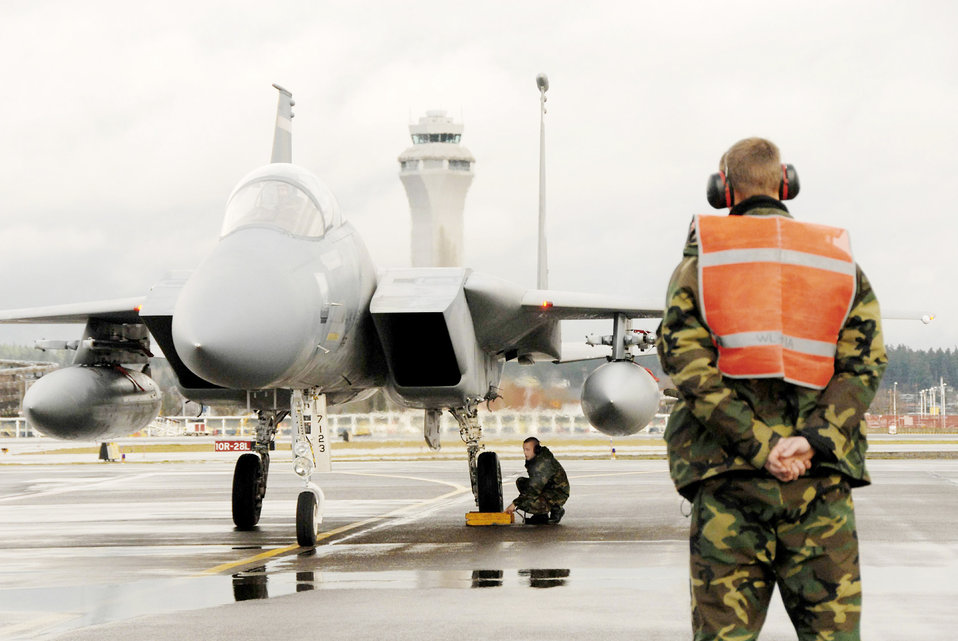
Oregon F-15s scramble to escort Hawaiian Airlines flight

Two Oregon Air National Guard F-15 Eagles, under the direction of North American Aerospace Defense Command, intercepted Hawaiian Air Flight 39 Jan. 6, 2010, in the vicinity of Portland, Ore.